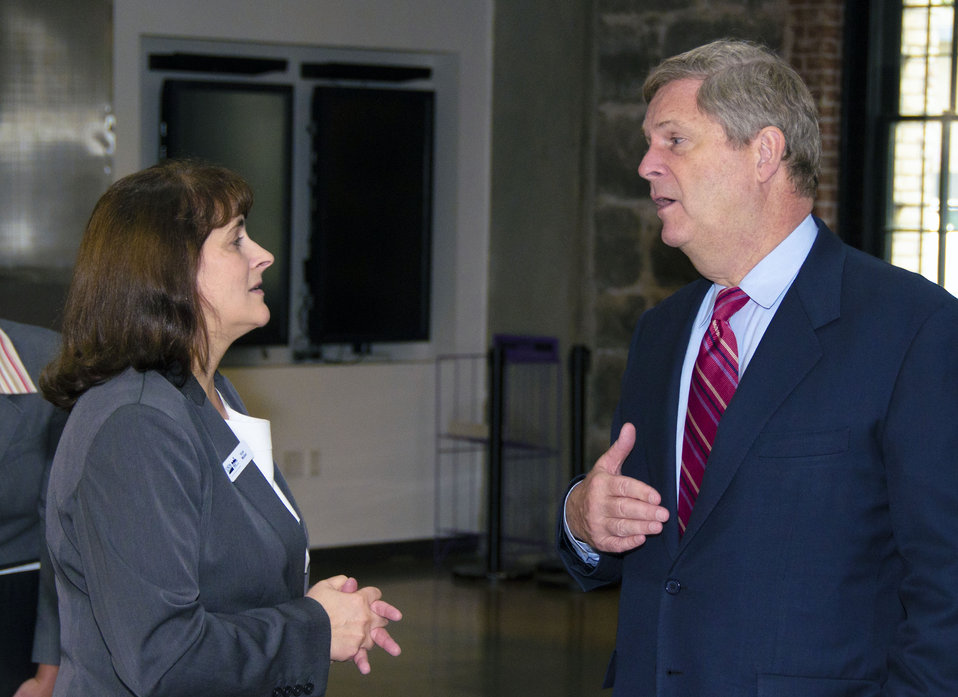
Agriculture Secretary Tom Vilsack of the United States Department of Agriculture explaining the American Jobs Act tin the Portland, OR area on Tuesday, September 27, 2011.